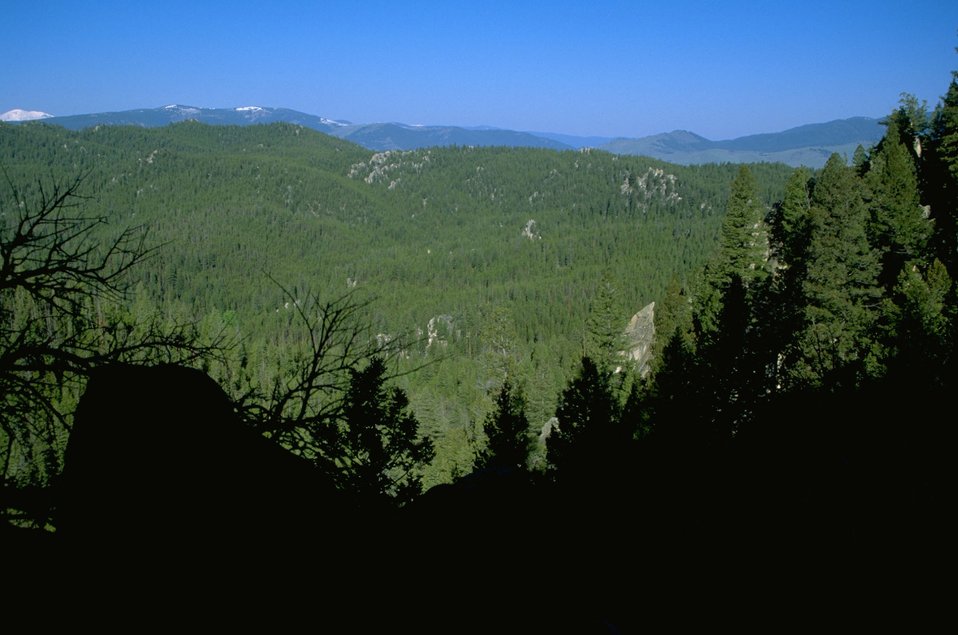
Humbug Spires Wilderness Study Area